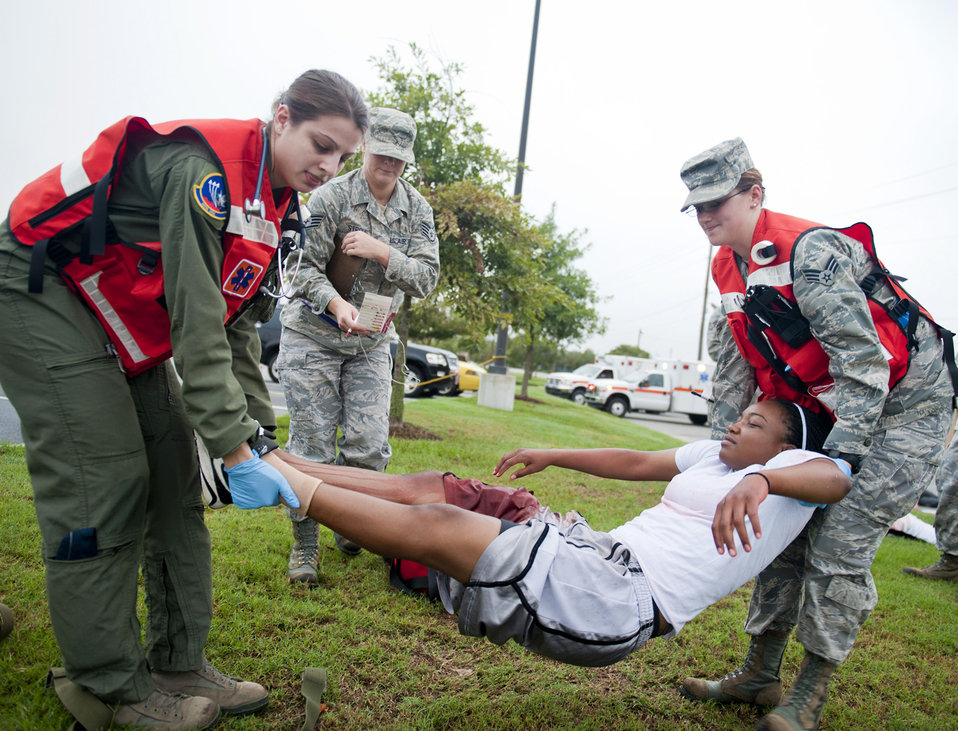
Flight surgeon

Capt. Susan Marchiano and Senior Airman Jennifer Lewis lift Senior Airman Shatavia Wallace to transport on a litter during a mass casualty exercise Sept. 23, 2011, at Moody Air Force Base, Ga. Marchiano is the 347th Operations Support Squadron flight surgeon, Lewis is a 23rd Aerospace Medicine Squadron medical technician and Wallace is an 824th Base Defense Squadron fire team member.